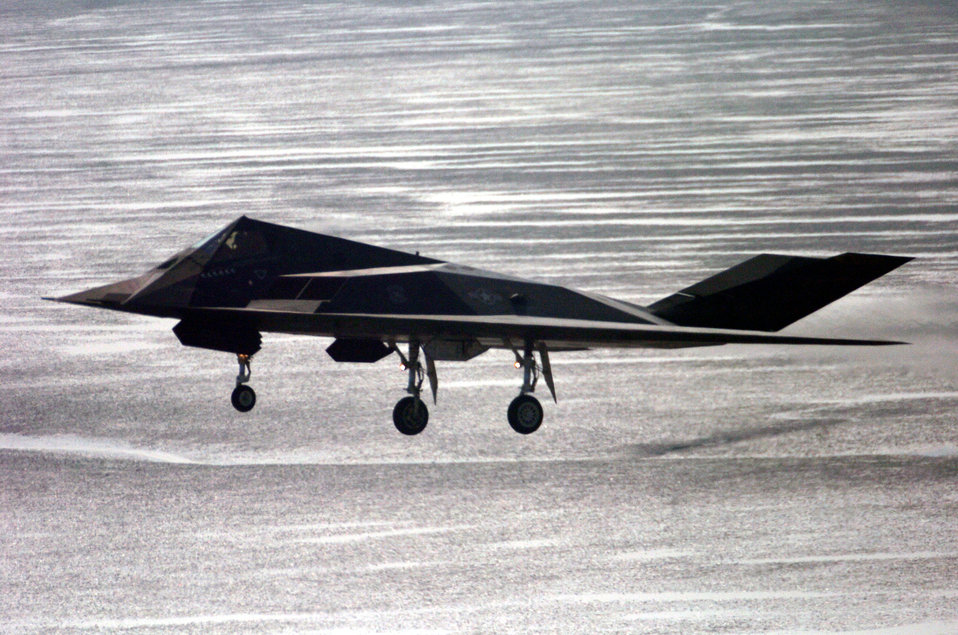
In for a landing

KUNSAN AIR BASE, South Korea -- Lt. Col. Dean Wright, a pilot from the 49th Tactical Fighter Squadron, Holloman Air Force Base, N.M., lands his F-117 Blackhawk after a mission. About 300 Airmen from Holloman AFB are currently deployed here supporting Pacific Air Force training operations.